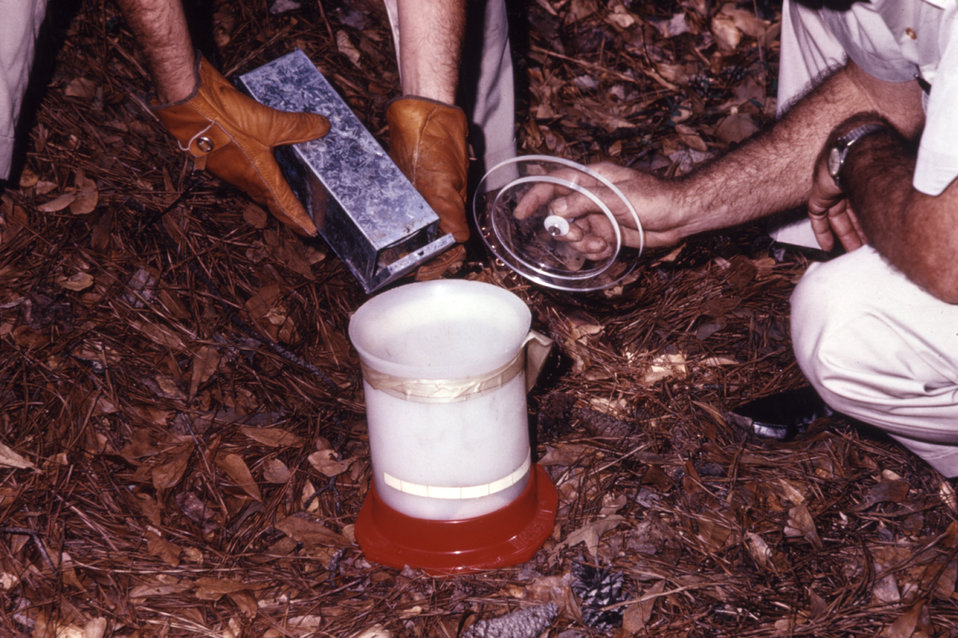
Here a small mammal is being transferred from a Sherman Trap� to an anesthesia jar containing dry ice.